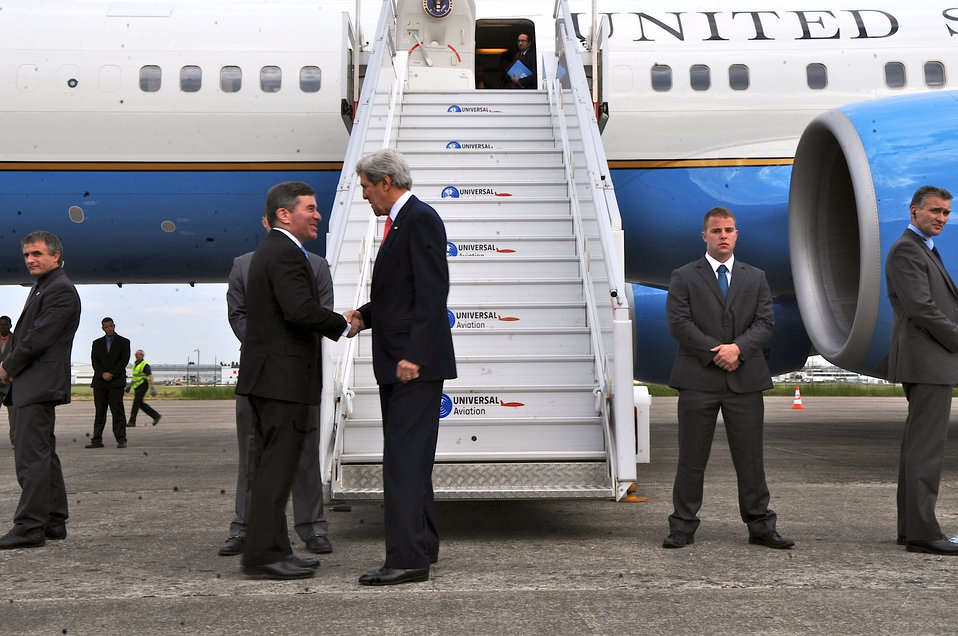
Secretary Kerry Arrives in Paris, France

U.S. Ambassador to France Charles Rivkin greets U.S. Secretary of State John Kerry upon his arrival in Paris, France, on May 27, 2013.